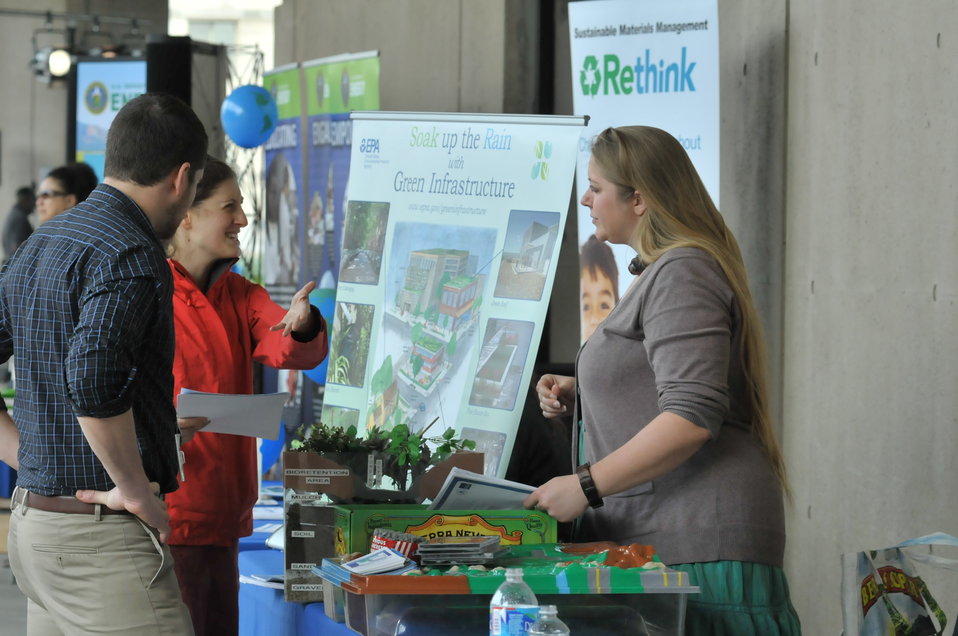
U.S Postal Services introduces a new Global: Sea Surface temperatures forever stamp at the Earth Day program at Department of Energy on April 22, 2014.